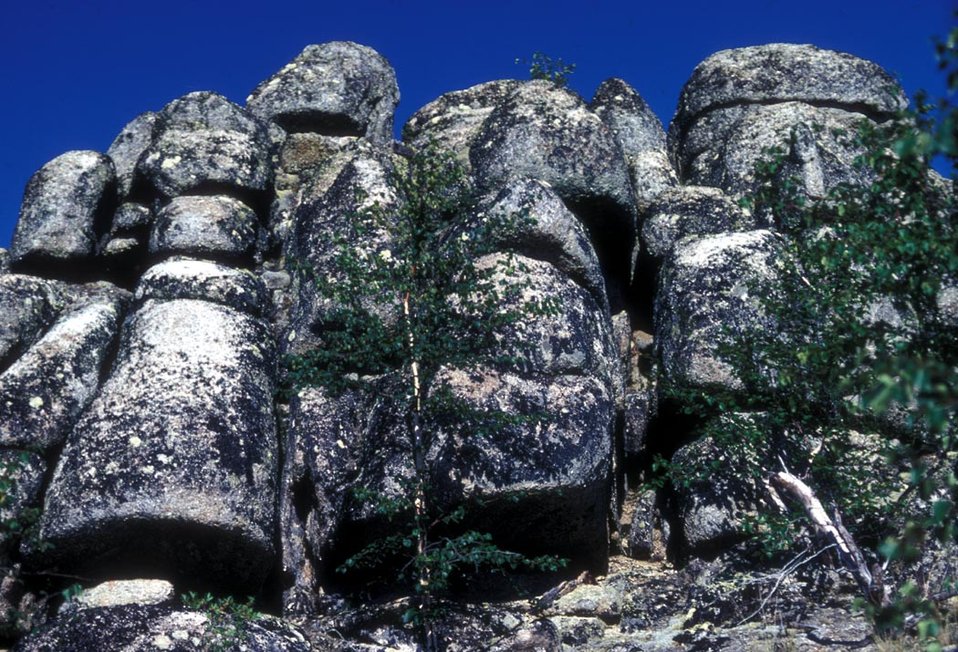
Basalt Columns.